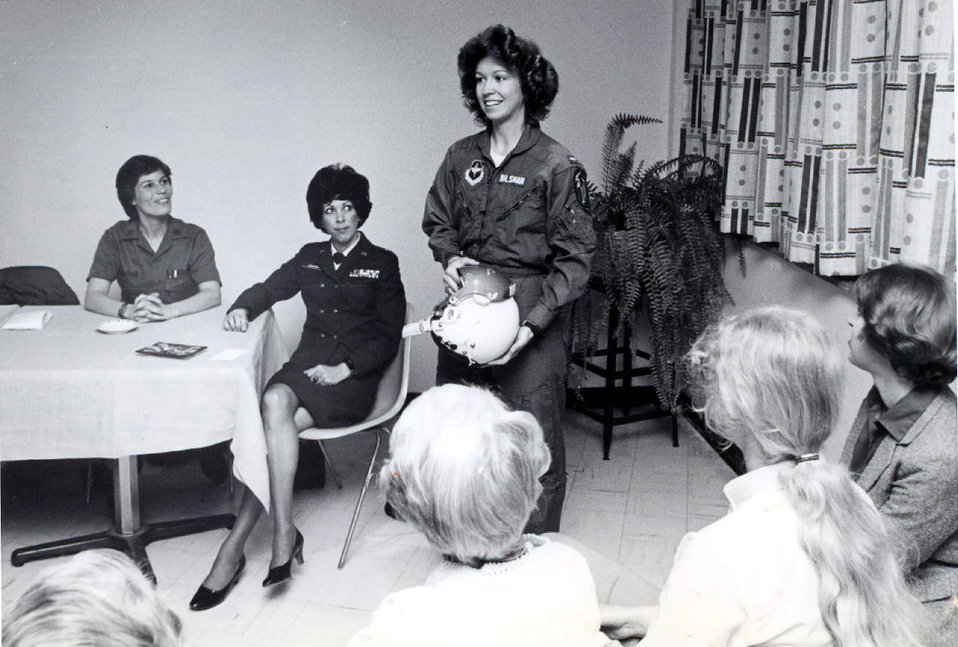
A woman of many firsts

Brig. Gen. Allison Hickey, then 2nd Lt. Allison Hilsman, participates in community outreach events during pilot training at Columbus Air Force Base, Miss.